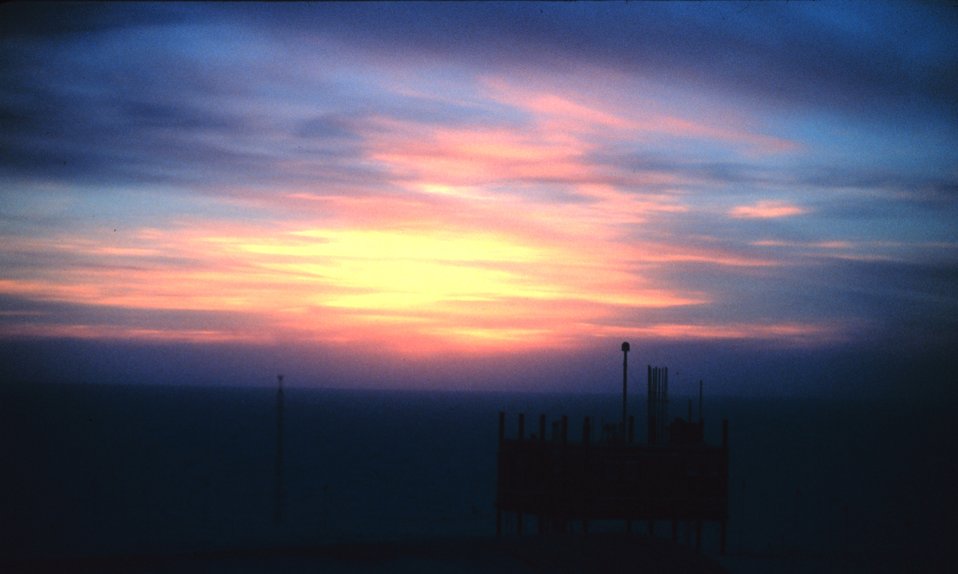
Instruments on the Clean Air Facility silhouetted against the sunset